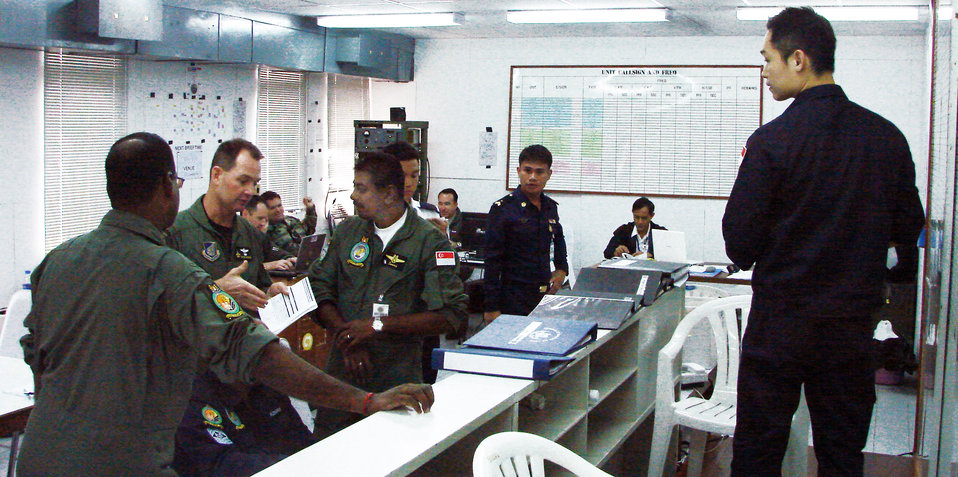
Exercise in Thailand shows multilateral partnership

U.S. and Singapore air force personnel discuss the flying schedule in the Cope Tiger 2009 live fly cell March 11 at Korat Royal Thai air force base, Thailand. Cope Tiger is an annual, multilateral large force aerial exercise conducted in Thailand including U.S., Thai and Singaporean military forces.